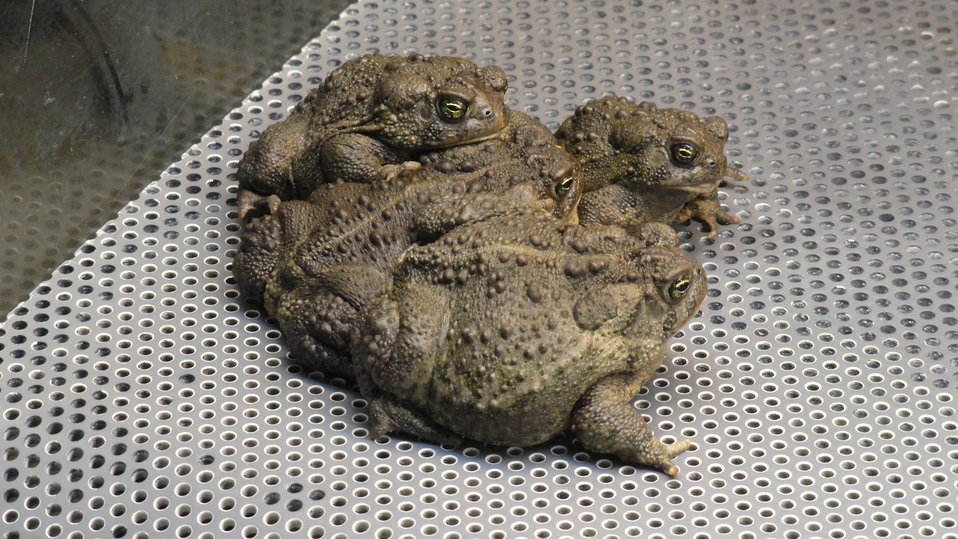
Visiting Saratoga National Fish Hatchery

In April of 2014, regional office employees visited Saratoga National Fish Hatchery to learn more about its efforts towards recovering the Wyoming toad (Bufo baxteri).

The hatchery adopted a unique role in becoming the first unit in the National Fish Hatchery System to become involved in rearing endangered amphibians. The Wyoming toad was a common sight on areas of the Laramie Plains, Albany County, Wyoming, into the early 1970s but the species' populations crashed in the mid-1970s. The Wyoming toad was listed as endangered by the U.S. Fish & Wildlife Service in January 1984. Found only in southwestern Wyoming, the Wyoming toad is considered the most endangered amphibian in North America. The hatchery maintains a captive population for breeding, rearing, and refugia, and the offspring from this program will be used for reintroduction efforts.